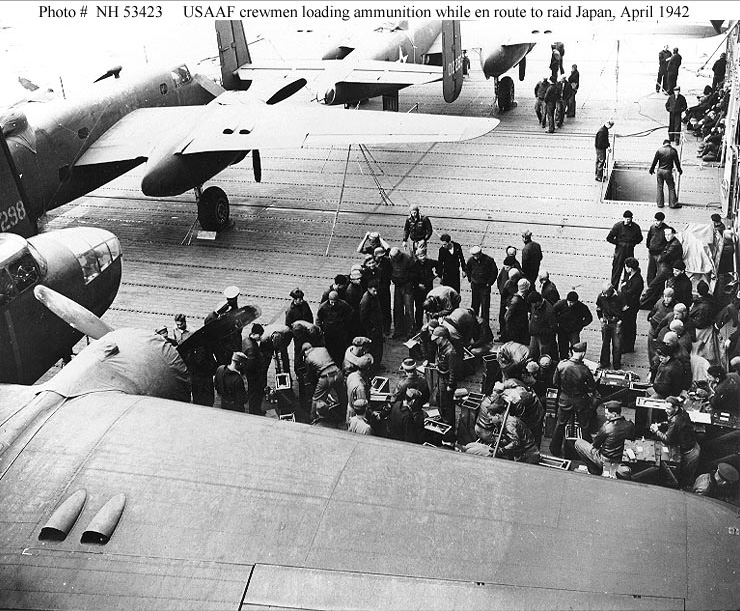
Doolittle Raid on Japan

Air crews prepare .50 caliber machine gun ammunition on the flight deck of USS Hornet (CV-8). Three of their B-25B bombers are visible. In the upper left is tail No. 40-2298 and mission plane No. 6, piloted by Lt. Dean E. Hallmark. The aircraft in top center is tail No. 40-2283 and mission plane No. 5, piloted by Capt. David M. Jones. Both attacked targets in the Tokyo area.
Lt. Hallmark, captured by the Japanese in China, was executed by them at Shanghai on 15 October 1942.
Note the open flight deck bomb elevator in the upper right.